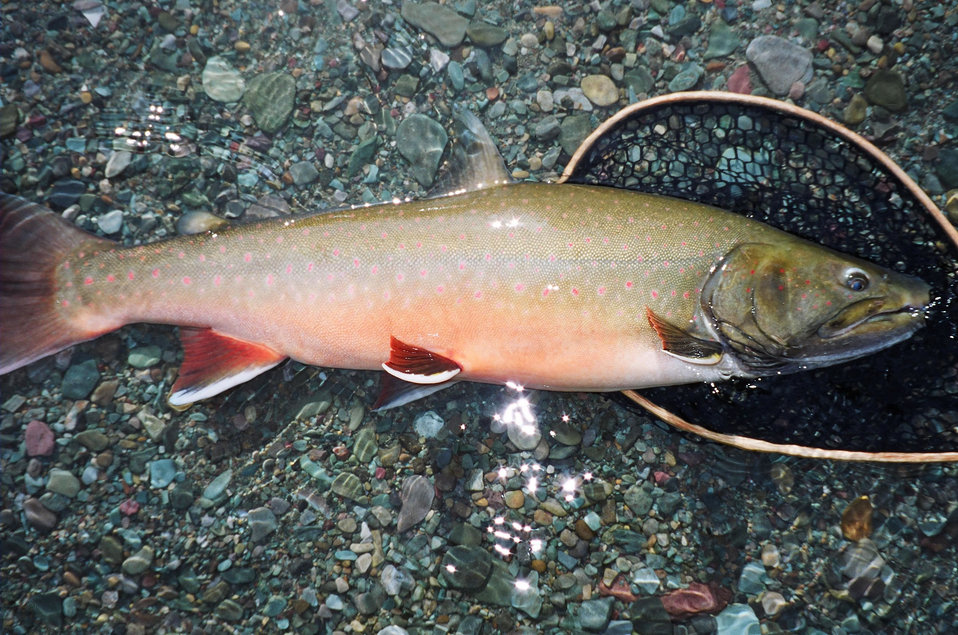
Bull Trout